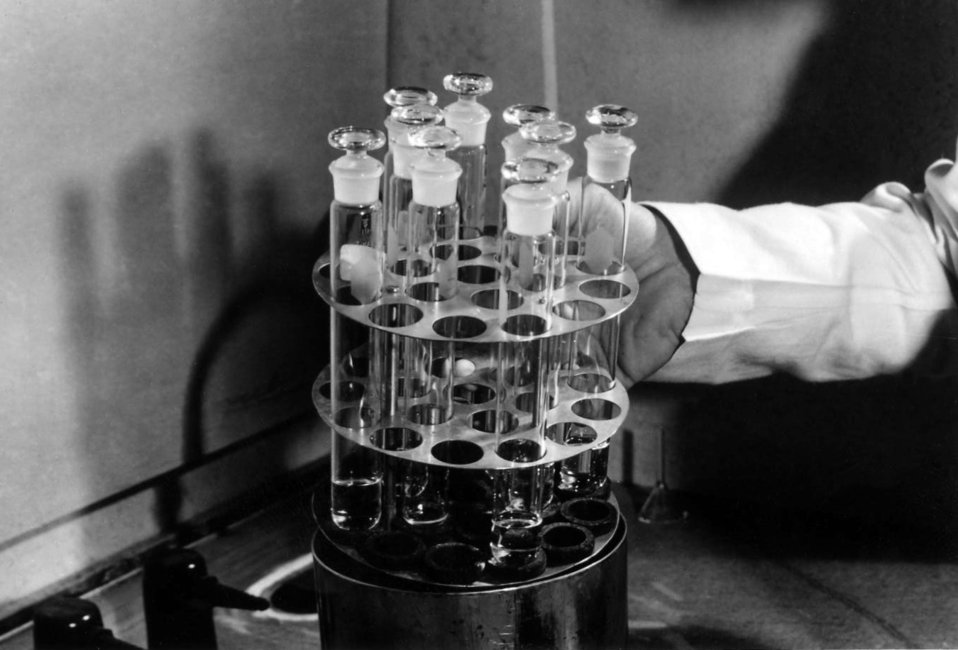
This historic photograph showed a laboratorian as he was handling glass-stoppered test tubes in a Centers for Disease Control infectious disease laboratory.